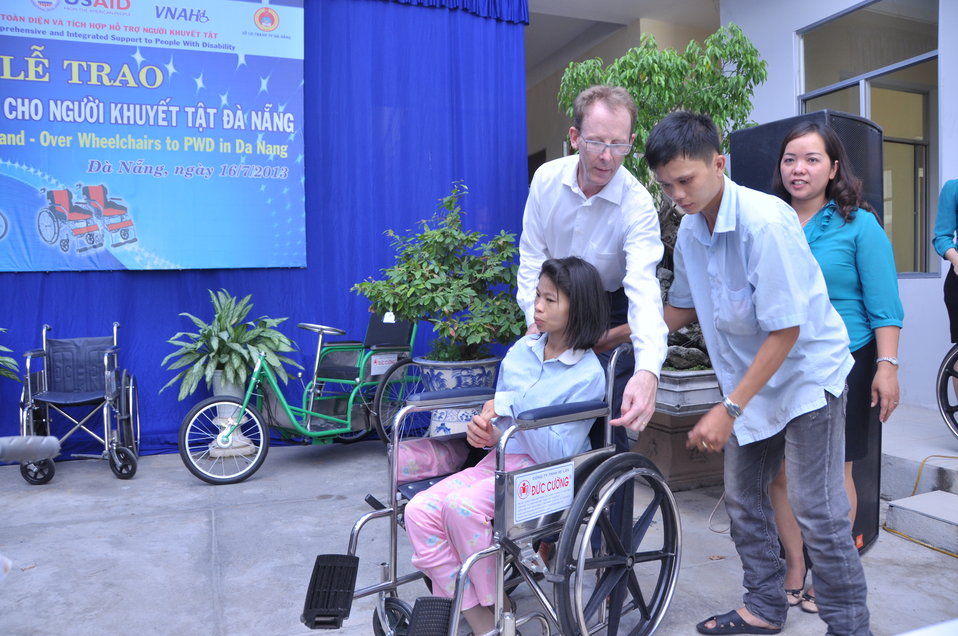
USAID Project Supports Rehabilitation Department for Children and Wheelchair Distribution in Danang

Beneficiaries in Danang, Vietnam, receive wheelchairs.